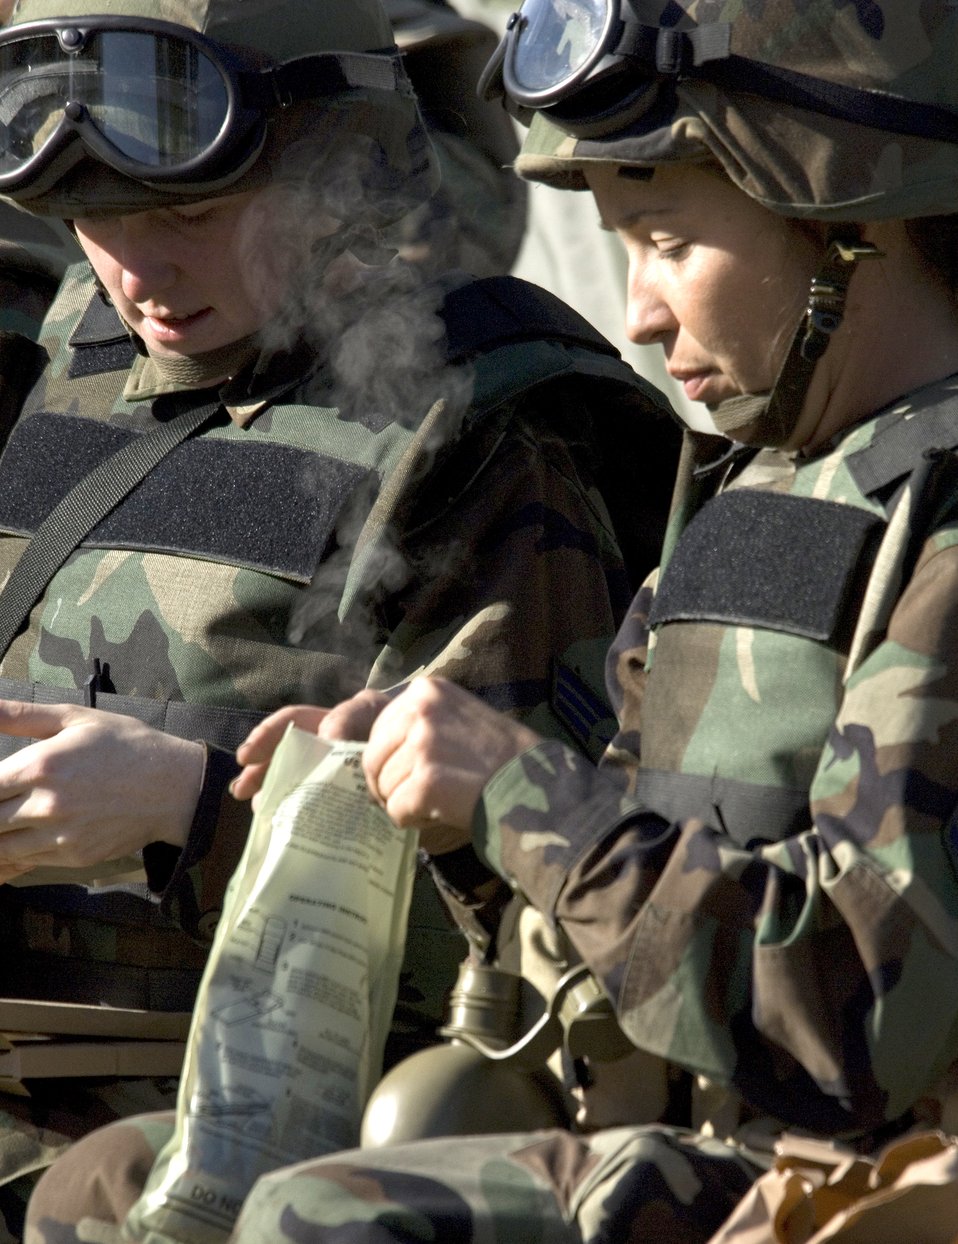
Airmen train for air evac

Tech. Sgt Stephanie Miller (right) and Senior Airman Rebecca Jaudon take time for lunch during annual medical field training at Fort Bragg, N.C., on Thursday, April 6, 2006. Sergeant Miller and Airman Jaudon are both air evacuation technicians with the 43rd Air Evacuation Squadron at Pope Air Force Base, N.C.